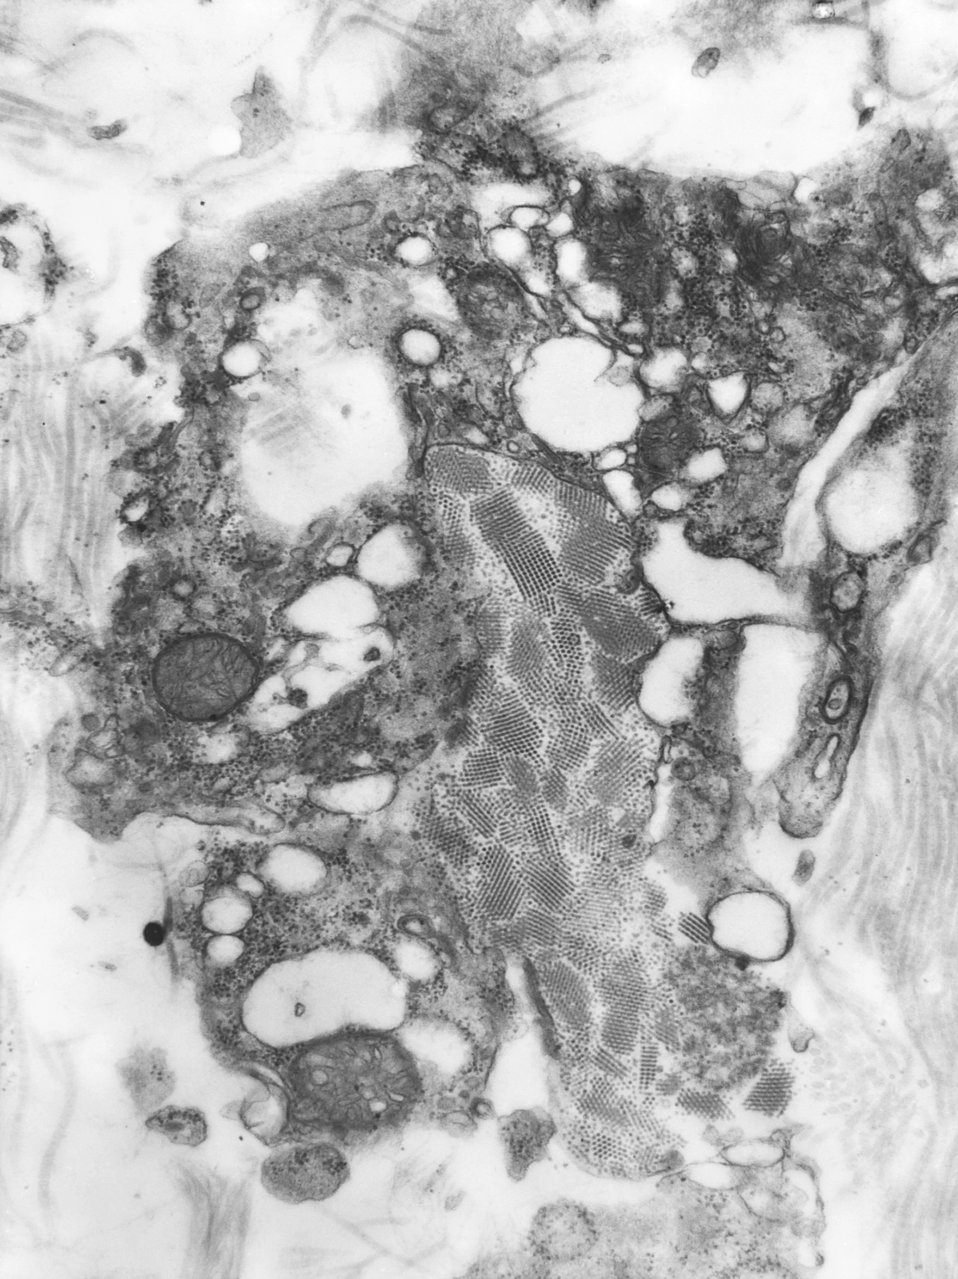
This transmission electron micrograph (TEM) revealed the presence of numbers of Nodamura virus virions. At its core, the Nodamura virus possesses a positive-sense, single-stranded RNA virus (( ) ssRNA) genome. Its outer protein coat, or 'capsid', is icosahedral (T=3) in shape, which means that its composed of 32 equilateral, triangular facets.